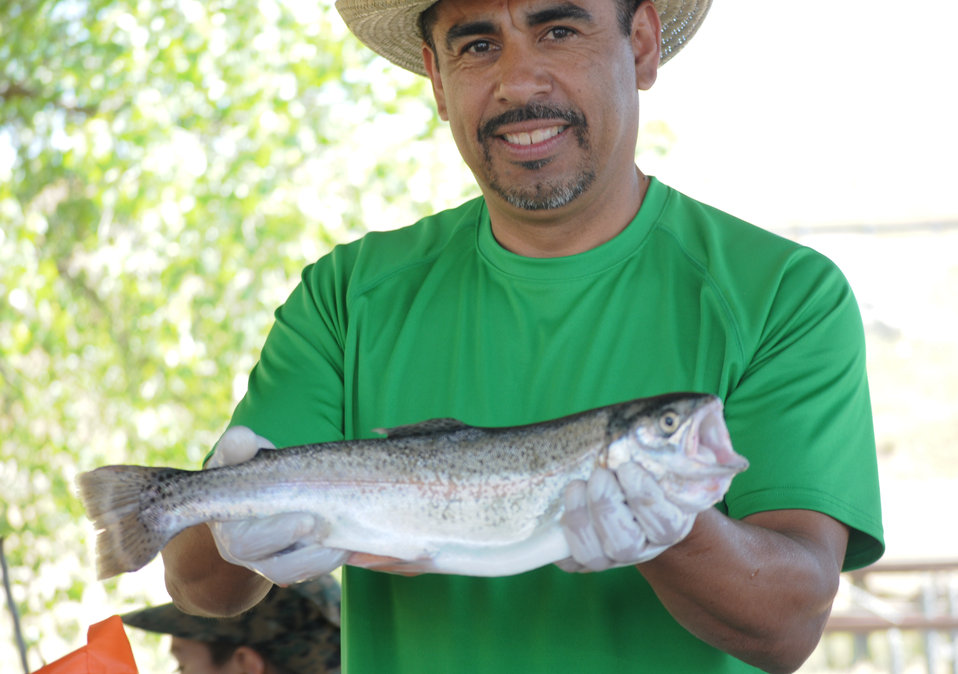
Kids Fishing Day at Hensley Lake

HENSLEY LAKE, Calif. (April 30, 2011) –Mid Valley Bass Club member and event volunteer Pete Ramirez displays a cleaned rainbow trout after teaching a clinic on fish cleaning at the 15th annual Kids Fishing Day here April 30. The Sacramento District’s Hensley and Eastman lakes take turns hosting the event, which provides free loaner gear and clinics on fishing techniques and water safety to help connect kids with the outdoors.